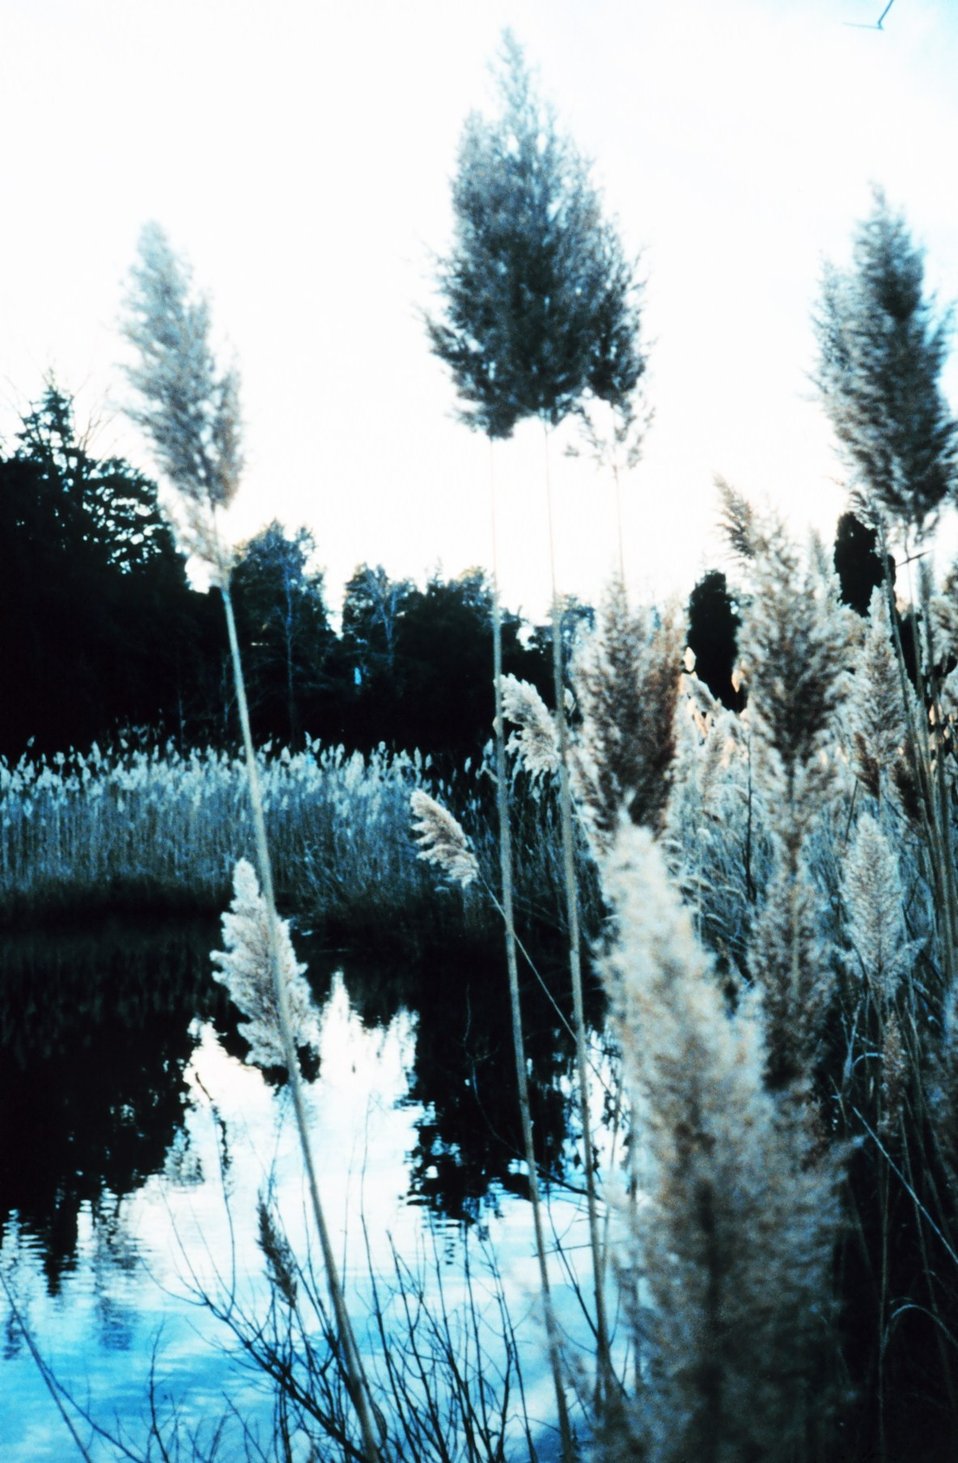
Phragmites, or common reed - although scenic, can be invasive nuisance species.